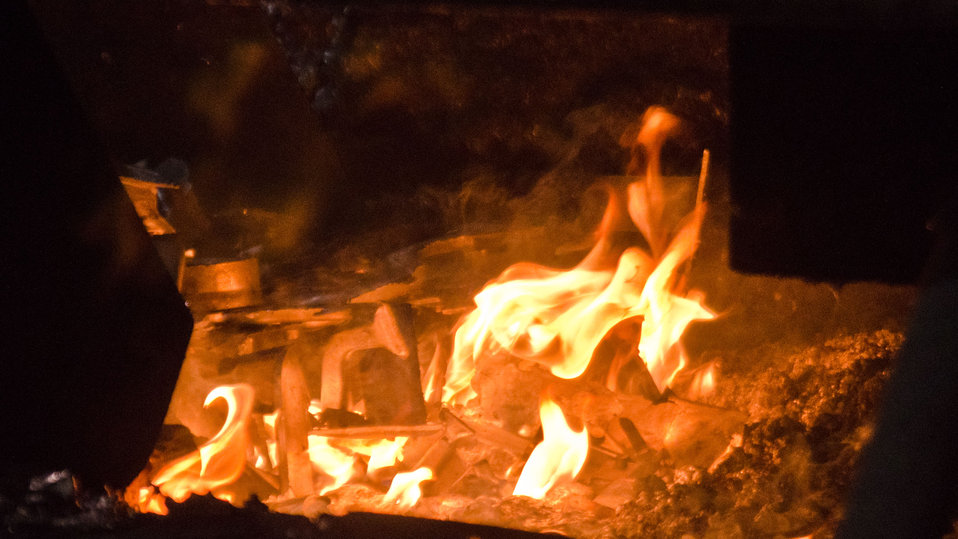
Recycled aluminum melts in the furnace crucible at Port City Group’s Port City Castings Corporation, a manufacturer of high-pressure aluminum die-castings, mostly for the automotive industry, in Muskegon, MI, facility on Wednesday July 20, 2011. Port City Group boosted its employment by 12 percent over last year thanks to two Rural Business Guaranteed Loans totaling $9.6 million. In its 80,000 sq. ft. facility, machines that range from 800 – 1,600 tons, and cast A380 aluminum alloy products from melted ingots of aluminum, into automotive components of U.S.A. made vehicles. The process features a variety of robotic presses; computer controlled machining; quality control facility; and complete measurement and testing laboratory. In 2009 banks were backing out of loans for PCG equipment purchase agreements. The U.S. Department of Agriculture (USDA) loan guarantee helped make the loan possible with its guarantee. PCG obtained the needed robotic and other equipment. This resulted in a stable workforce that has since grown. When asked about their USDA experience, Port City Group Sales Manager Laura LaGuire said, “It was great! They were very helpful. Everything that came up was handled smoothly, the money came in place when it was needed, and it was a very smooth transition.”